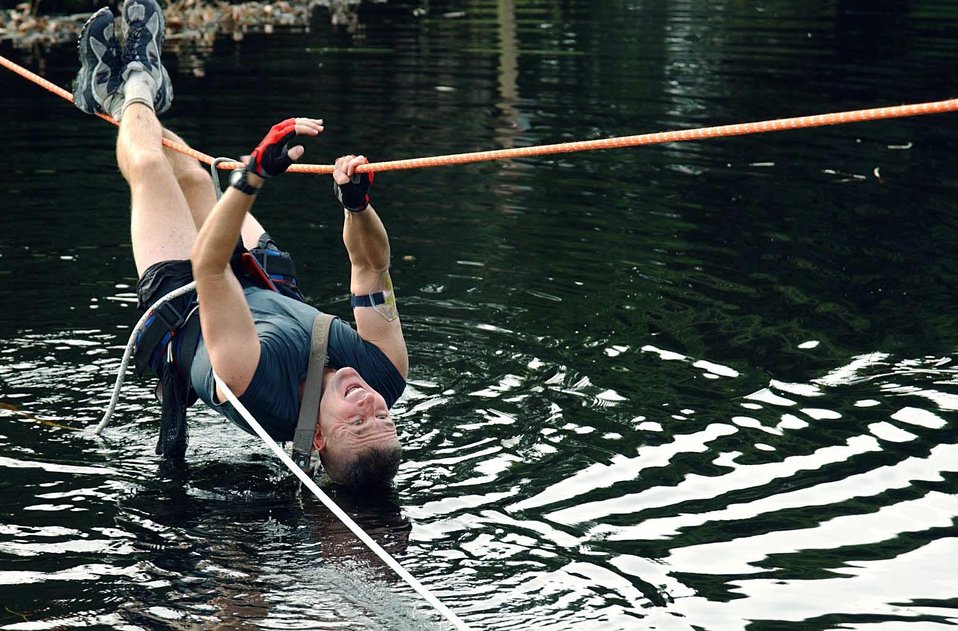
Race to the finish

MACDILL AIR FORCE BASE, Fla. -- Army Maj. Drew Moores makes his way across Lewis Lake here during the Enduro Challenge Aug. 21. His team eventually went on to win the adventure race with a time of 4 hours, 23 minutes and 15 seconds.